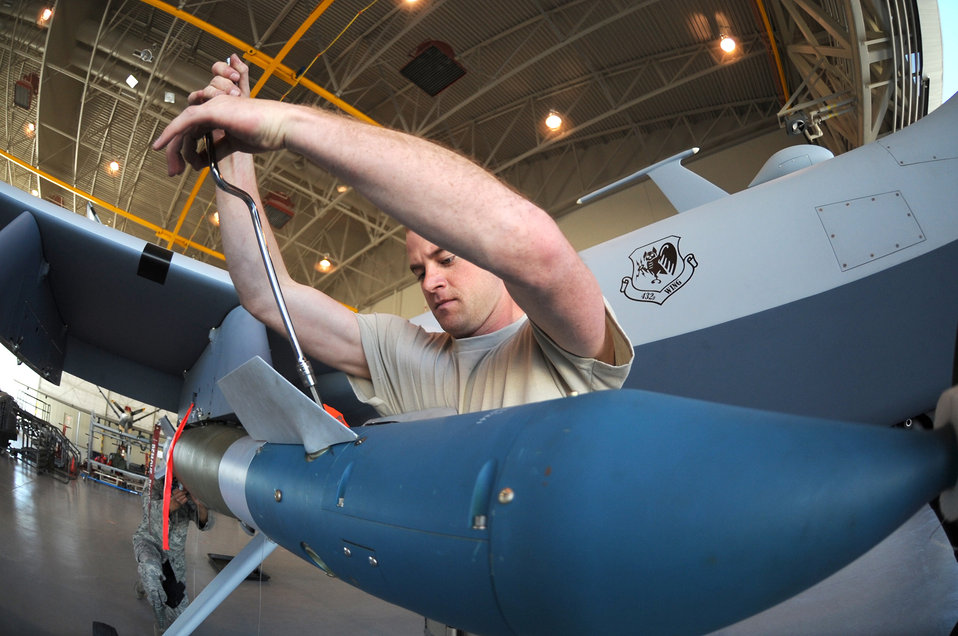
Training for unmanned aircraft systems

Senior Airman Jason Atwell secures the fins onto a guided bomb unit-12 Paveway II laser-guided bomb during weapons load training April 22 at Creech Air Force Base, Nev. MQ-9 Reaper load crew members were conducting monthly training to maintain their qualifications on the airframe. Airman Atwell is a MQ-9 Reaper weapons loader assigned to the 432nd Aircraft Maintenance Squadron.